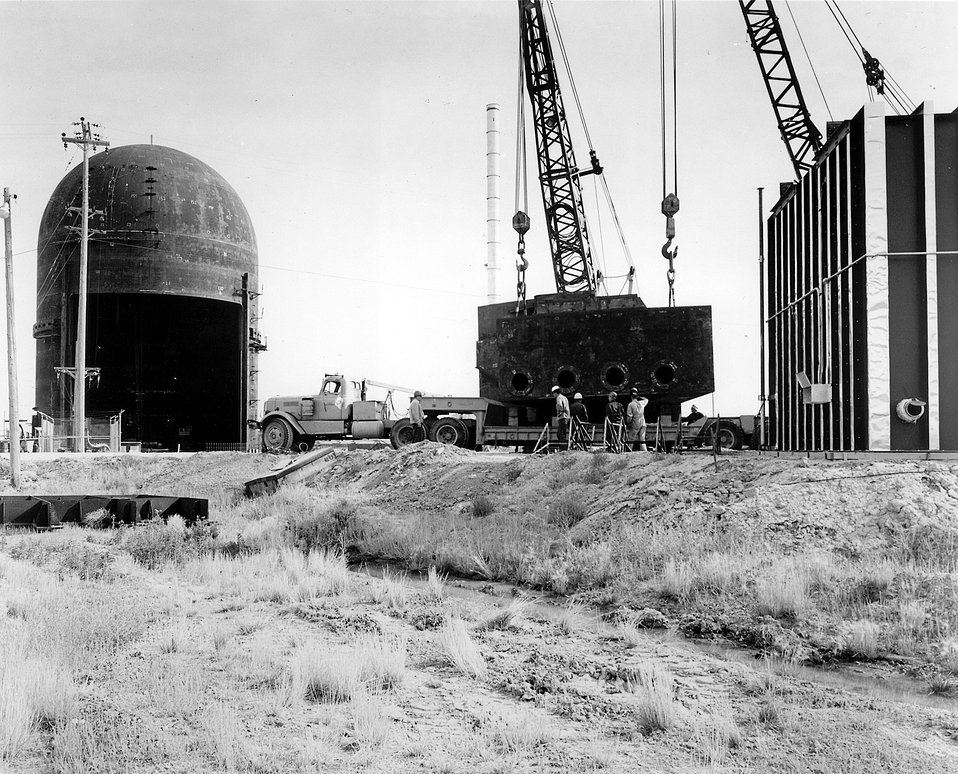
National Reactor Testing Station, Idaho... Fresh from a stress relief oven, a 104-ton door frame corner, right foreground, nears readiness for installation in the Loss of Fluid Test (LOFT) containment building (left background) at the National Reactor Testing Station in Idaho. Circa 1970.